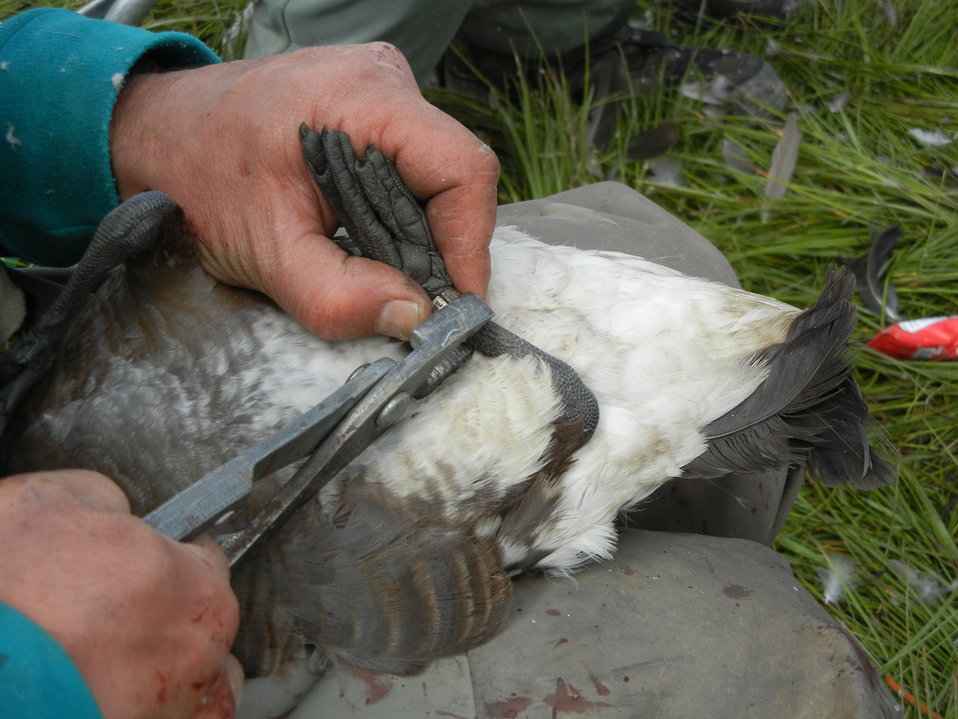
Banding Cacklers

Biologist applying a metal band to a cackling goose.

USFWS Yukon Delta NWR